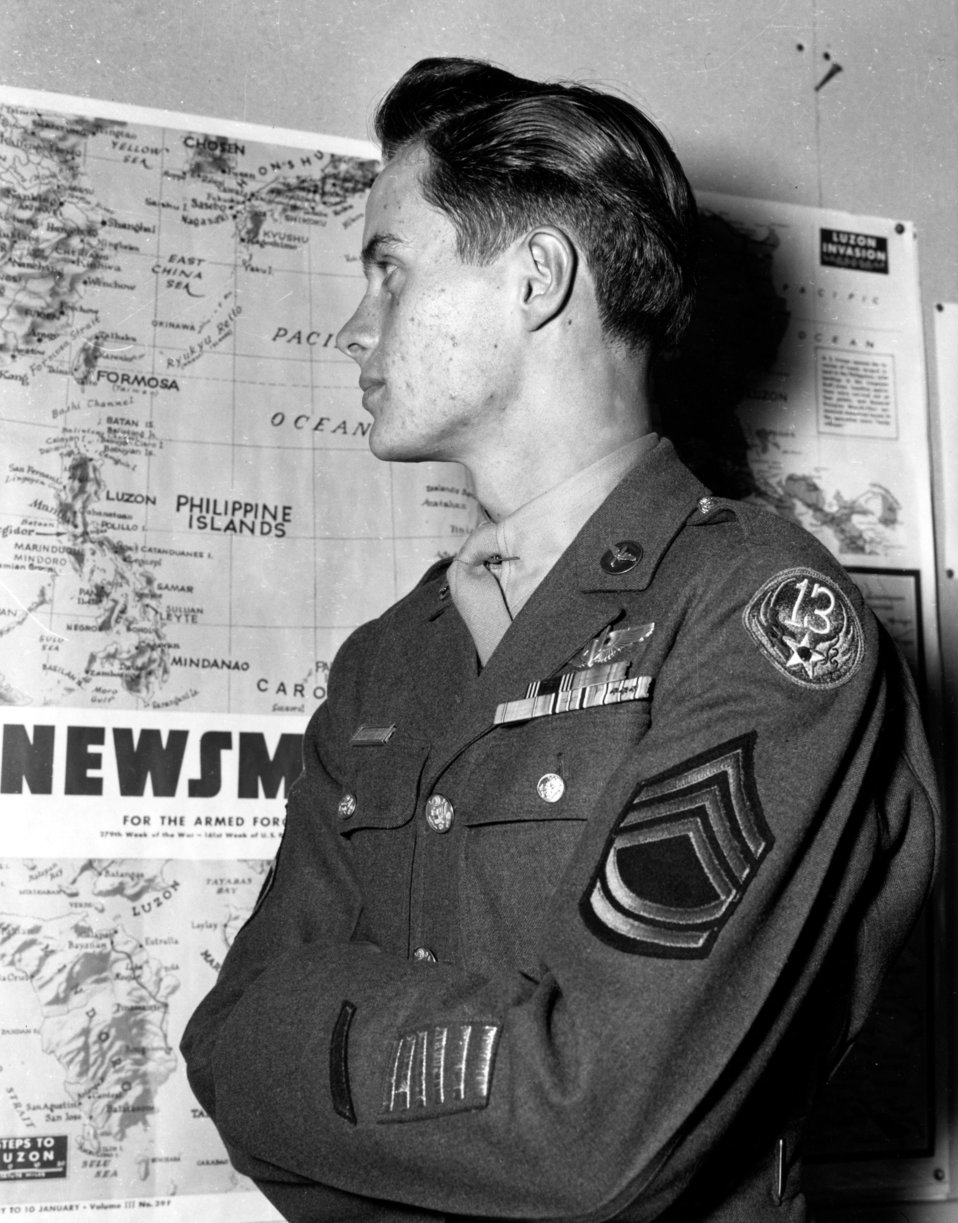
Army Activity at Oak Ridge